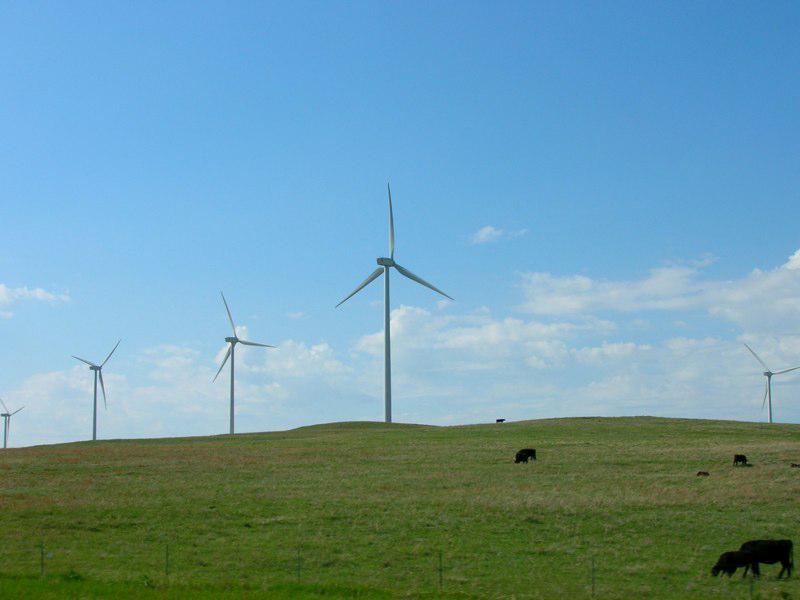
SMOKY HILL WIND FARM LOCATED IN ELLSWORTH, KANSAS.

The Wind for Schools Program, supported by the National Renewable Energy Laboratory, aims to help rural school districts install 1.9-kW wind turbines for use in education, and to encourage incorporation of renewable energy education into the K-12 science curriculum. Their goal is to install five turbines per year at rural schools throughout Kansas, and provide assistance to schools in educating their students about renewable energy, especially wind power.